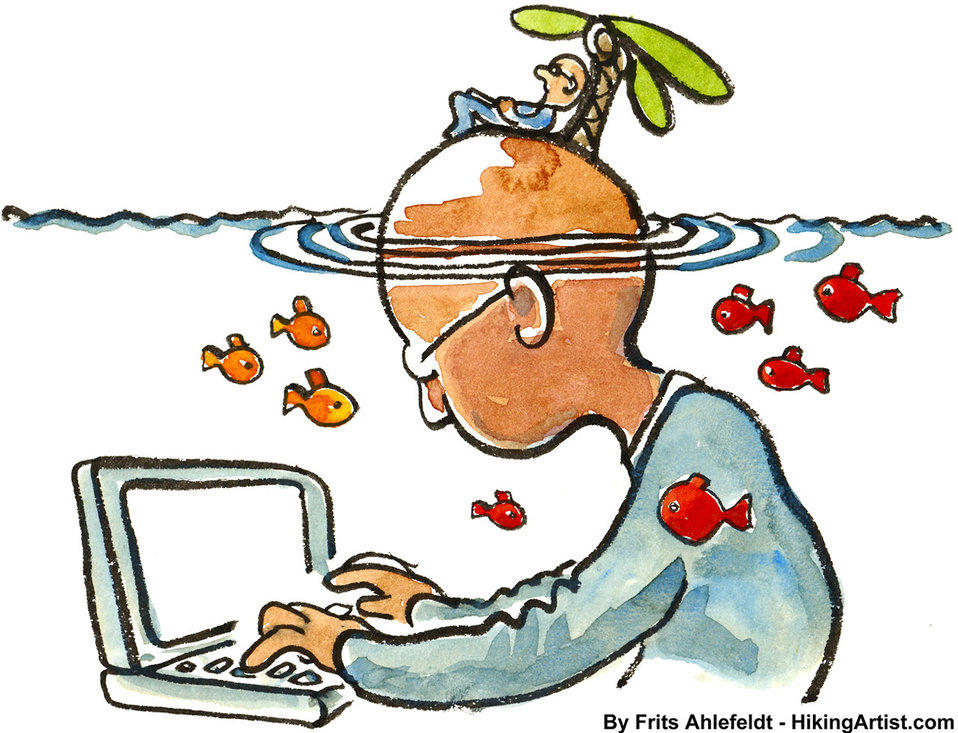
Creative daydreaming

How to make the sub-consicous work while you relax.